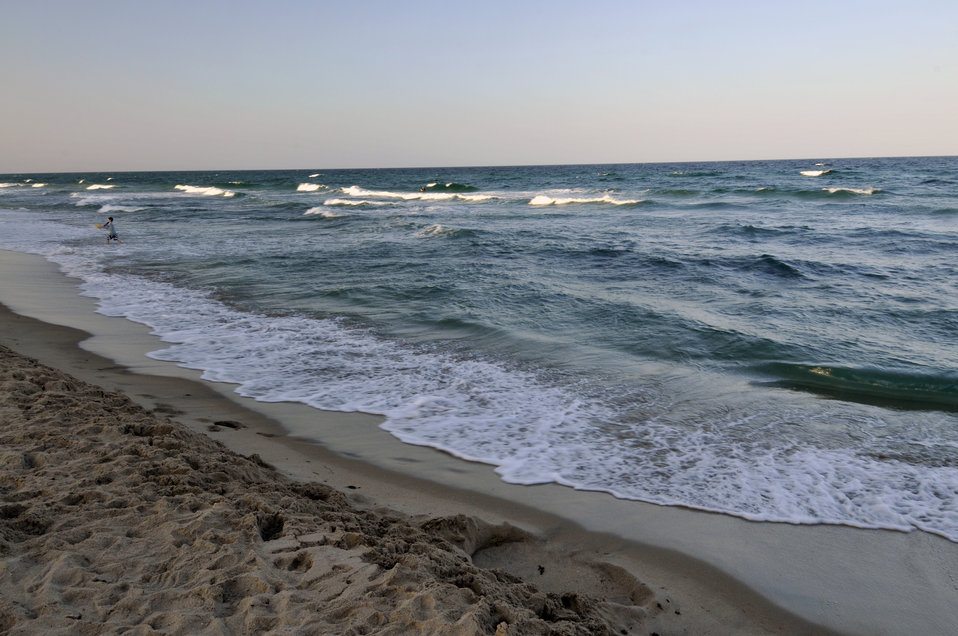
The sun sets on a beach in Miami, Florida on April 5, 2010.